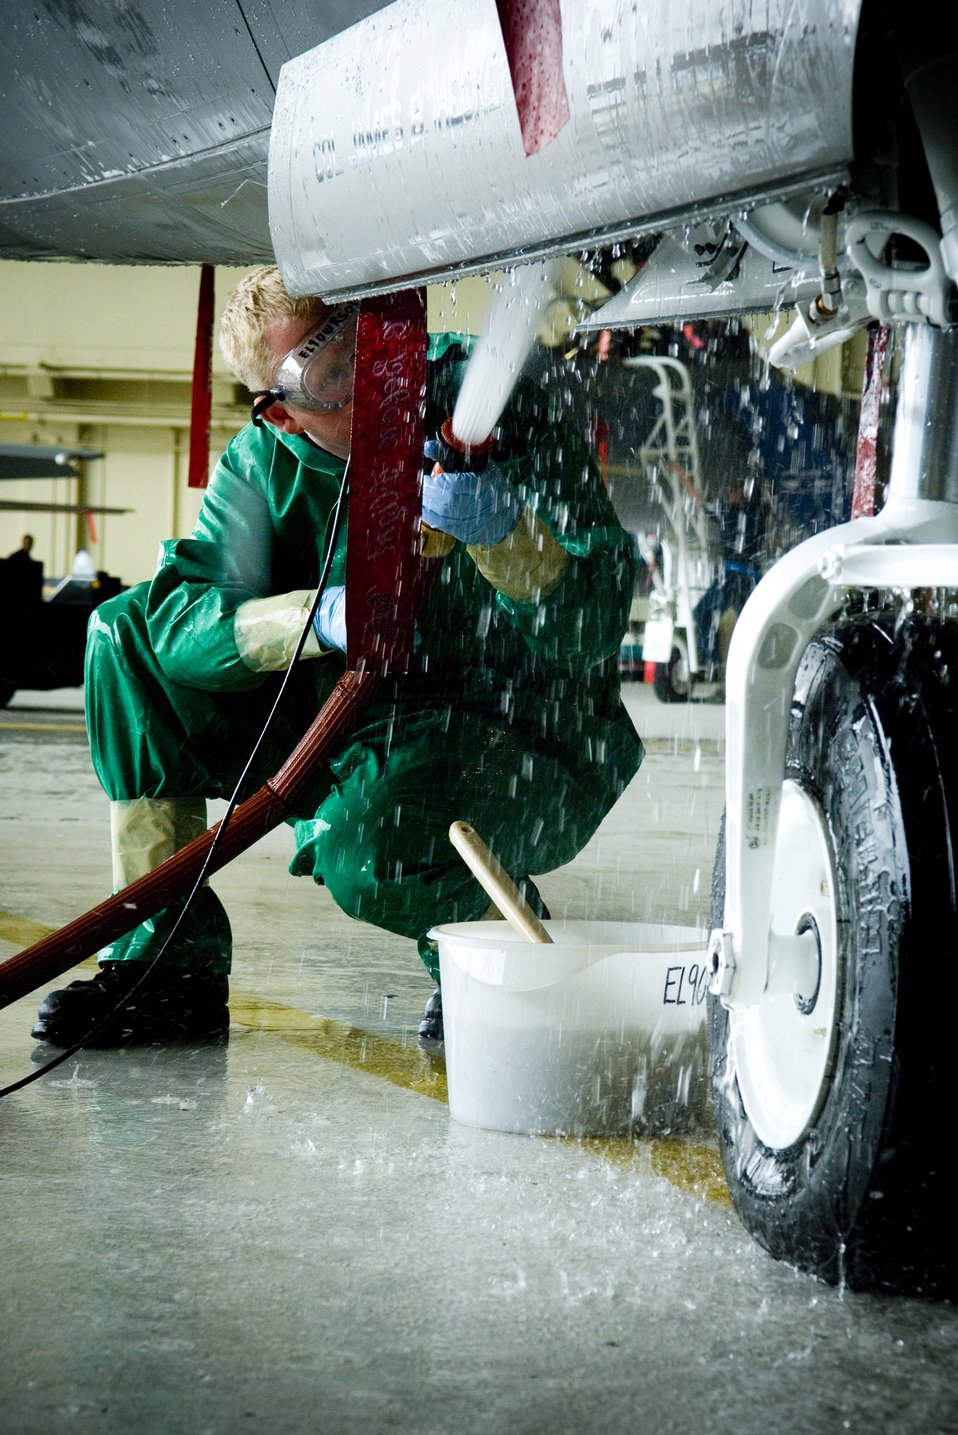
Bathtime for Raptors

Senior Airmen Michael Doane cleans out the grime in the landing gear of an F-22 Raptor from the 90th Fighter Squadron Aug. 14 at Elmendorf Air Force Base, Alaska. The aircraft was washed for the first time Aug. 14 since arriving here Aug. 8. Airman Doane is assigned to the 3rd Aircraft Maintenance Squadron.